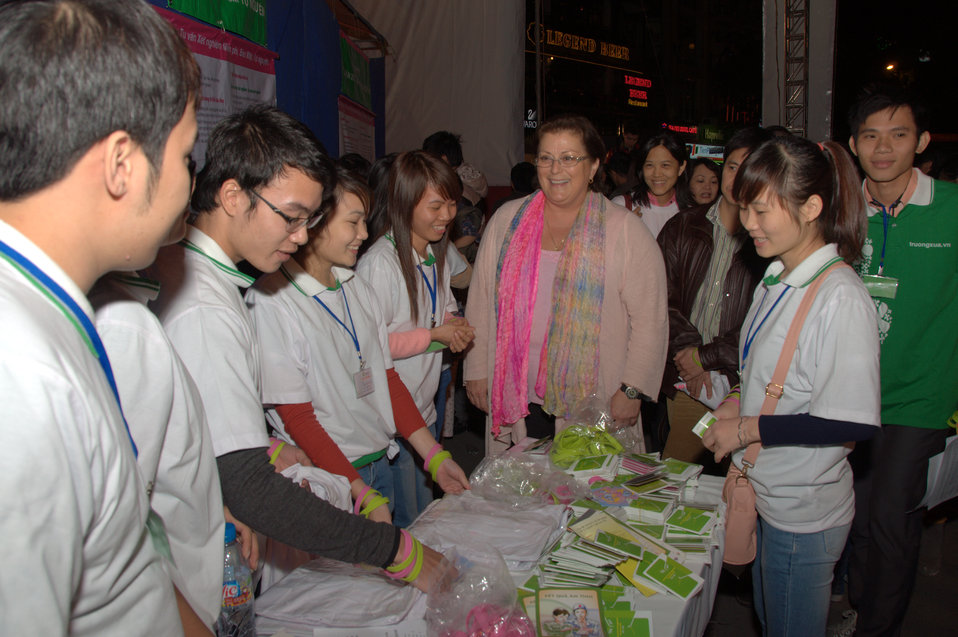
USAID and PEPFAR supports an outdoor concert to promote Vietnam's national action month for HIV

U.S. Embassy Deputy Chief of Mission Claire Pierangelo speaks to volunteers, who support in distributing ICT materials.

Hanoi, December 18, 2012.